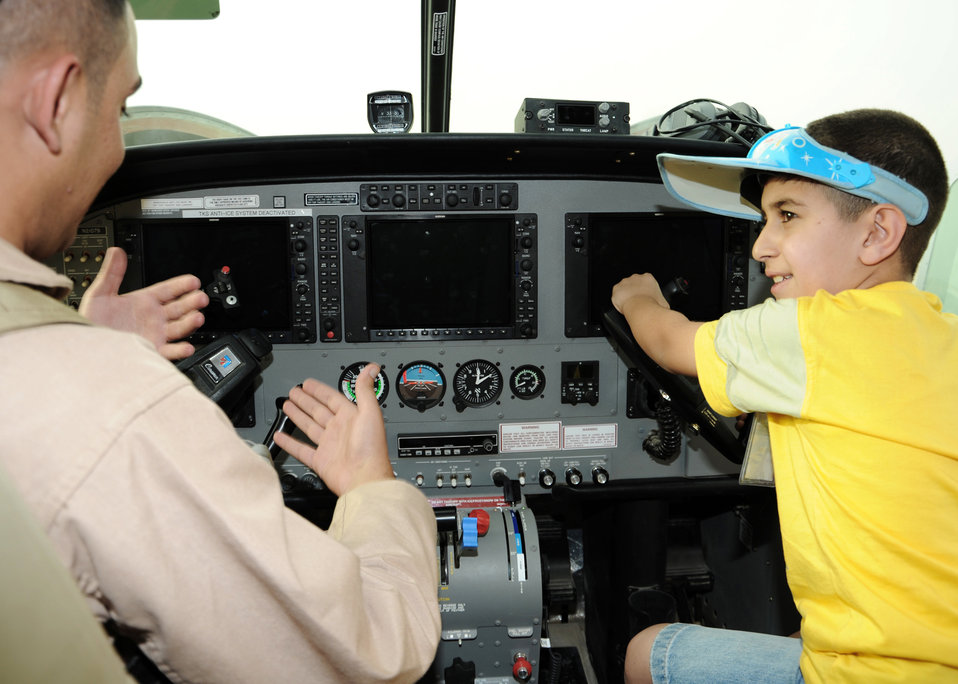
Iraqi children come out to play at Joint Base Balad

A pilot in training for the Iraqi air force explains the cockpit controls of an aircraft to an Iraqi child during Iraqi Children's Day Oct. 10, 2009, at Joint Base Balad, Iraq. Base officials hosted more than 100 children, parents and officials aiming to increase community relations with surrounding villages.